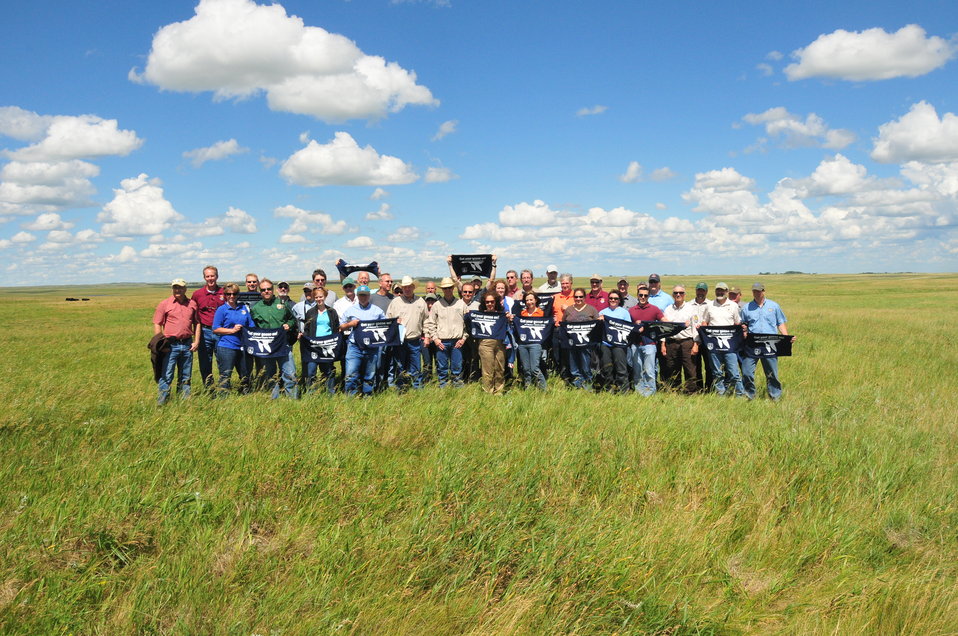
Get Your Goose On!

The national meeting for regional chiefs of the National Wildlife Refuge System is held three times a year in different locations around the country. This 2012 meeting took place in McPherson County, South Dakota, and focused on the Dakota Grassland Conservation Area.

This photo was taken on the Wade Weiszharr and Family Ranch, which contains perpetual U.S. Fish and Widlife grassland and wetland easements. This site is also located in the heart of Prairie Pothole Region, making it extremely productive migratory bird habitat and a great place to “Get your goose on!”

This group shot was taken on the beautiful Wade Weisszhauer Family Ranch!